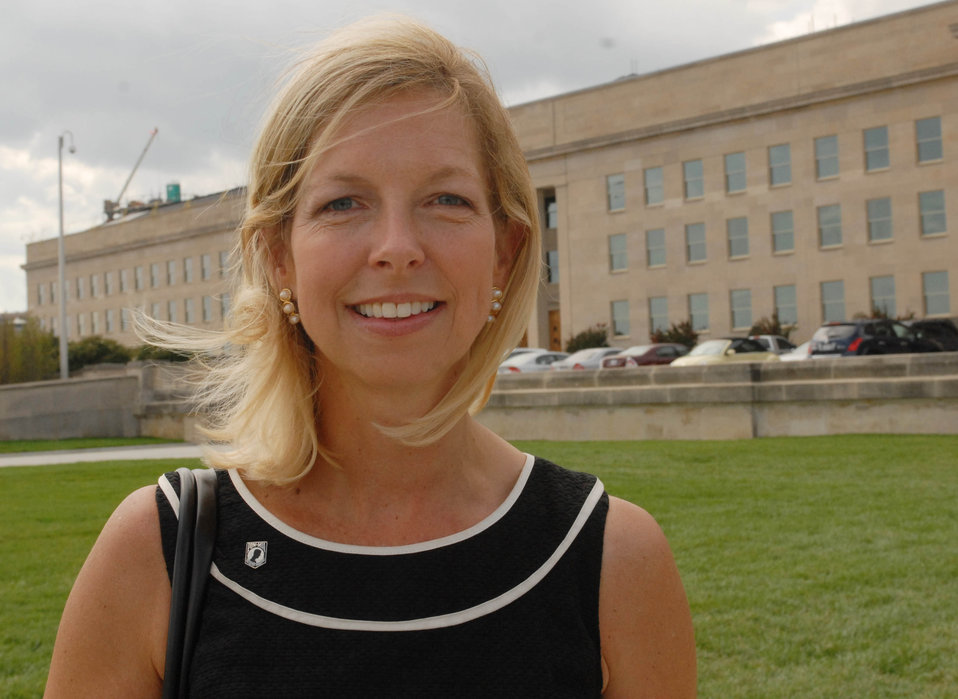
Family member cites father’s recovery at ceremony

Colleen Shine brought a message of hope to the National POW/MIA Recognition Day ceremony at the Pentagon, Sept. 17, 2010. The recovery of her father, Lt. Col. Anthony Shine, after 24 years demonstrates to all families of missing servicemembers that “answers are possible,” she said.